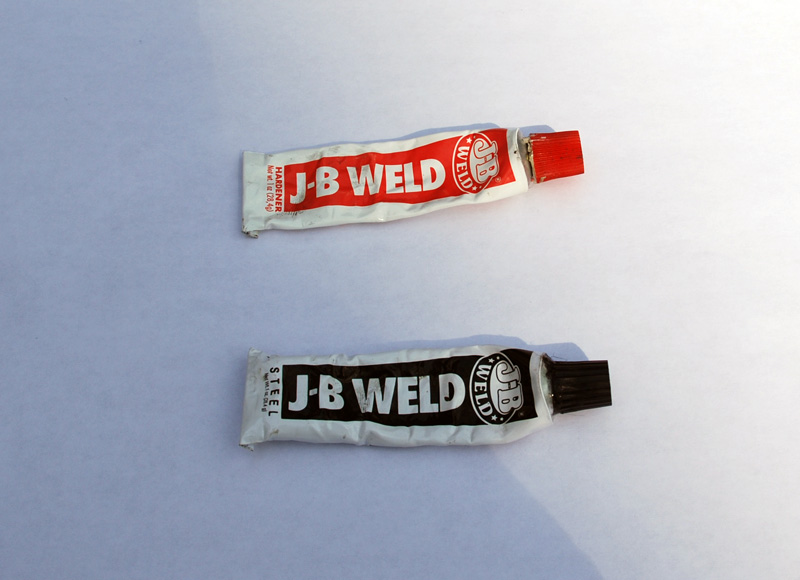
Two tubes of J-B Weld.